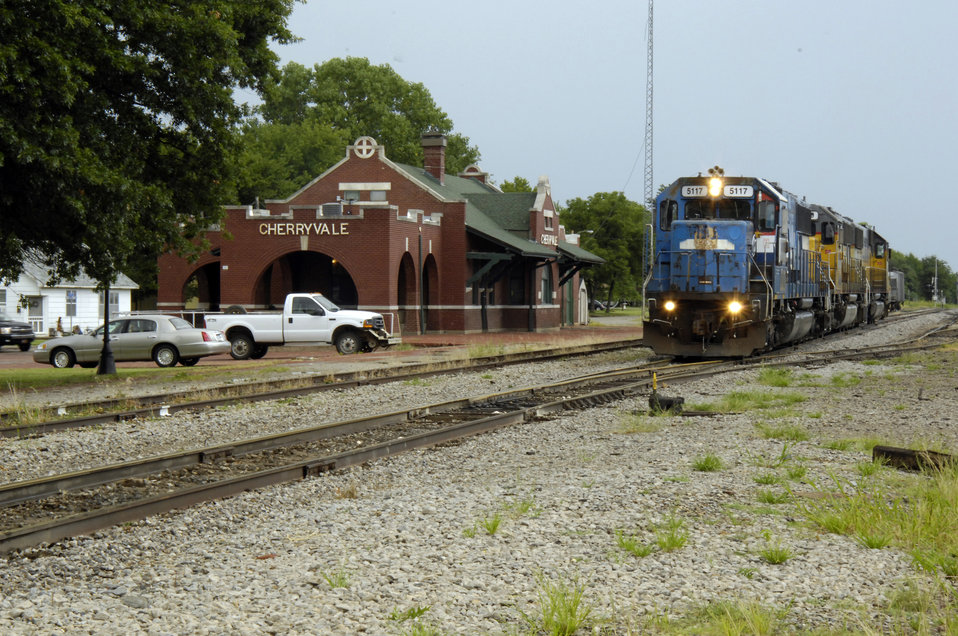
A freight train passes through Cherryvale, Kansas on August 17, 2009.